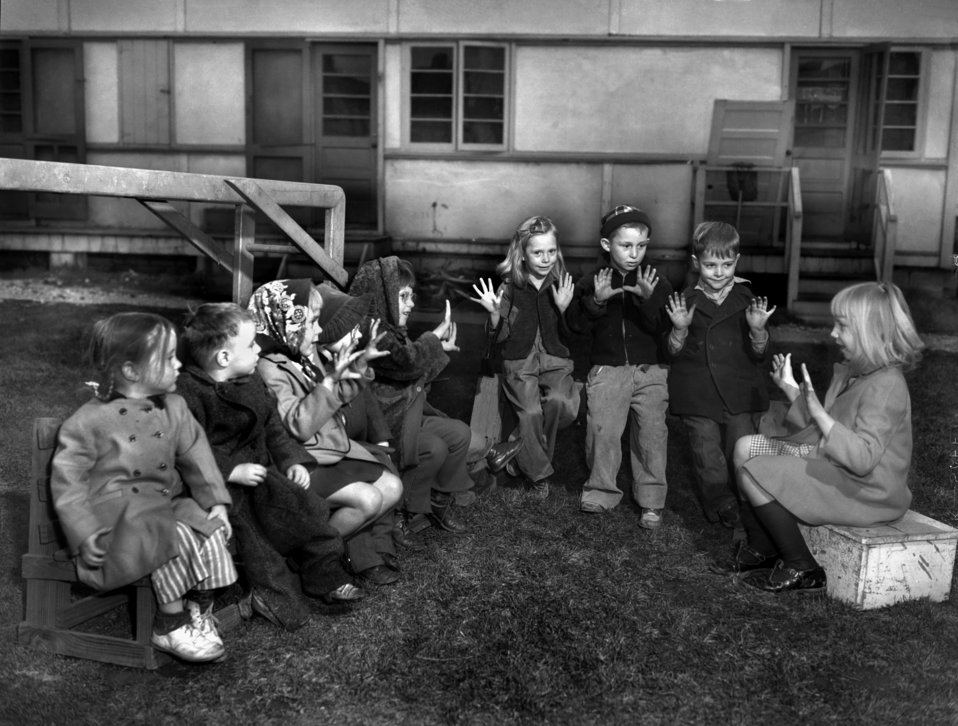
Nesper House Oak Ridge

3262-10 DOE photo Ed Westcott 1-23-1947 Child care for working mothers/famlies Oak Ridge Tennessee